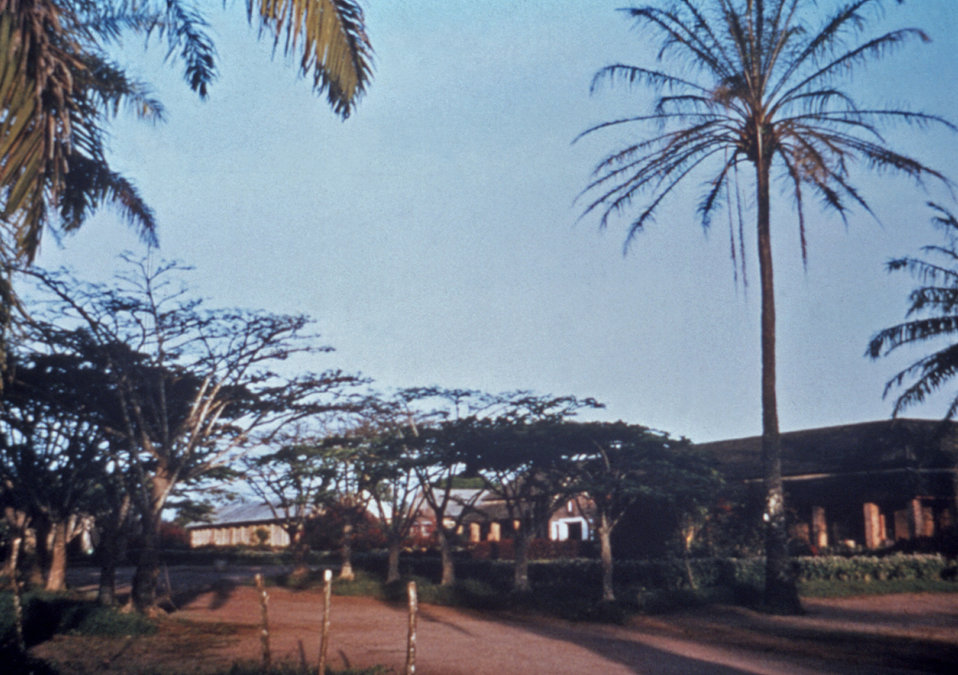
This photograph showed the outside of a Yambuku, Zaire mission hospital, where an ICU for Ebola patients was set up during the country's 1976 outbreak.